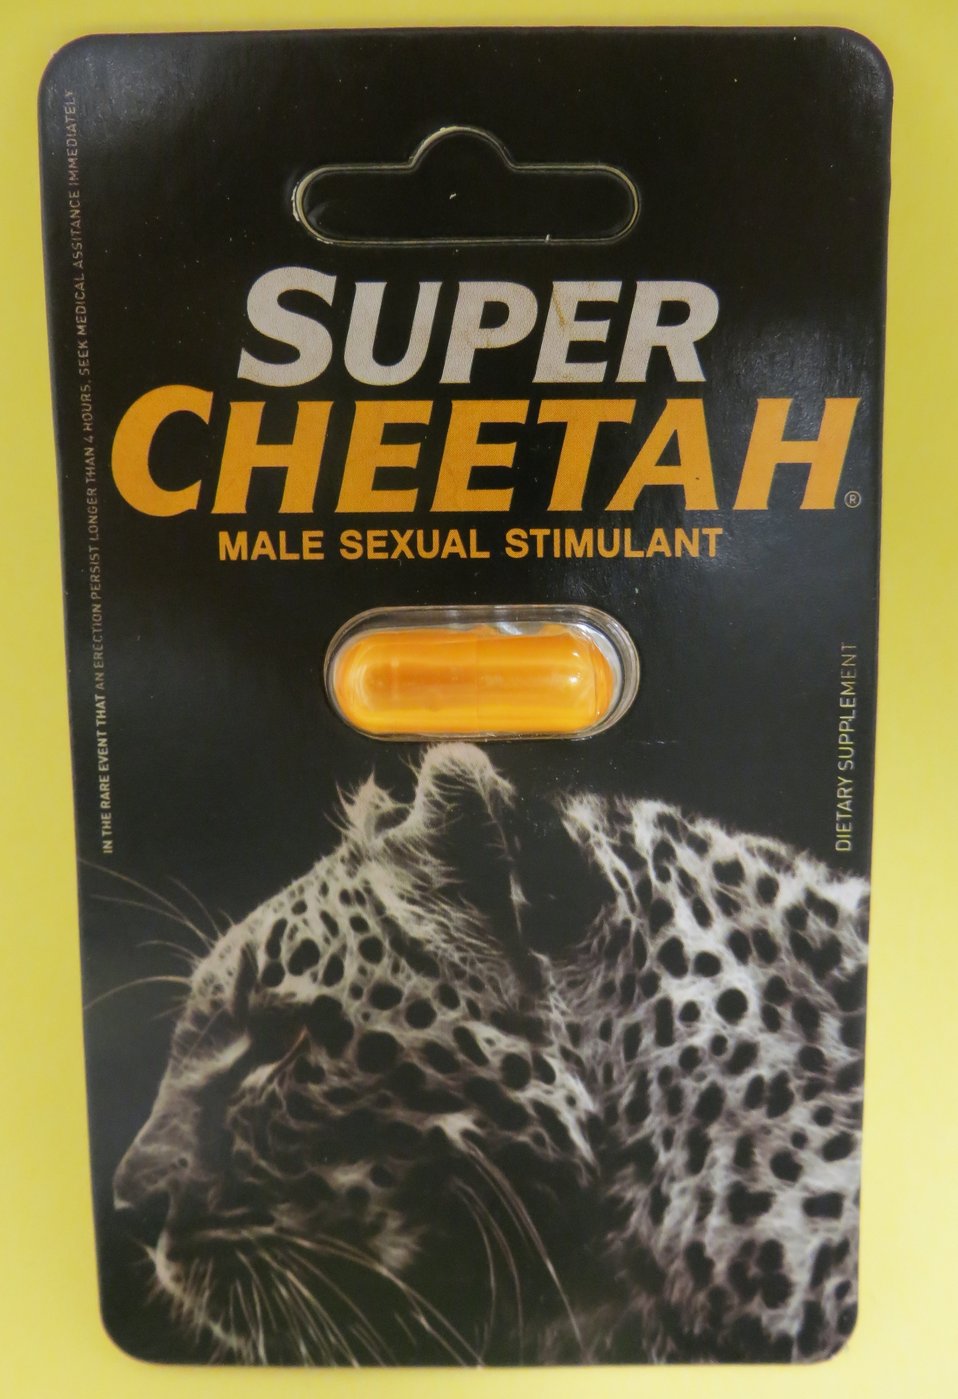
Super Cheetah

June 10, 2013 - The FDA is advising consumers not to purchase or use 'Super Cheetah,' a product promoted and sold for sexual enhancement. The product was found to contain undeclared sildenafil. For more information, go to www.fda.gov/Drugs/ResourcesForYou/Consumers/BuyingUsingMe...

And read this Consumer Update: Beware of Fraudulent ‘Dietary Supplements’